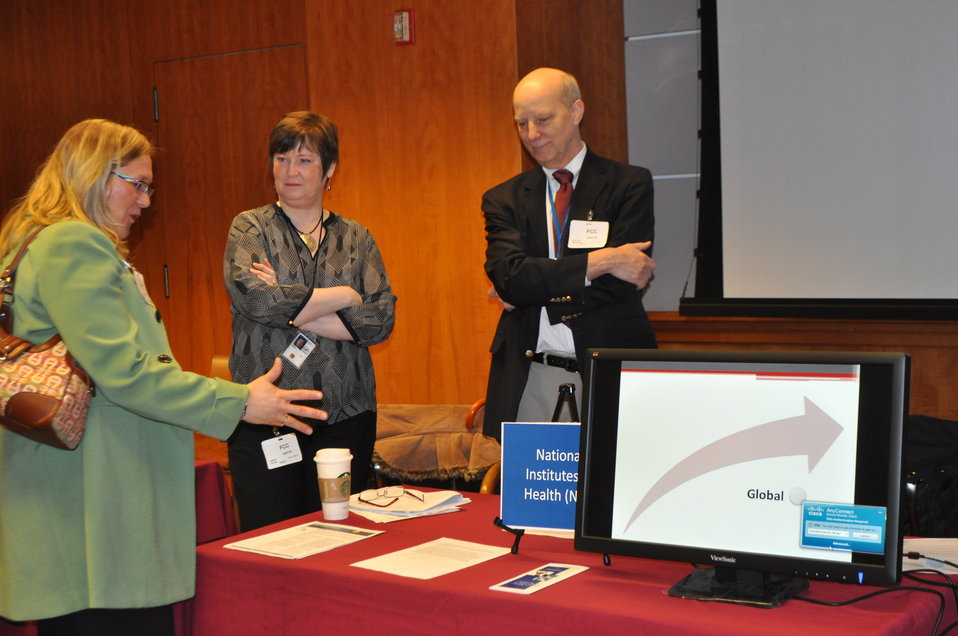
12.6.13 mHealth Innovation Expo

FCC mHealth Innovation Expo.